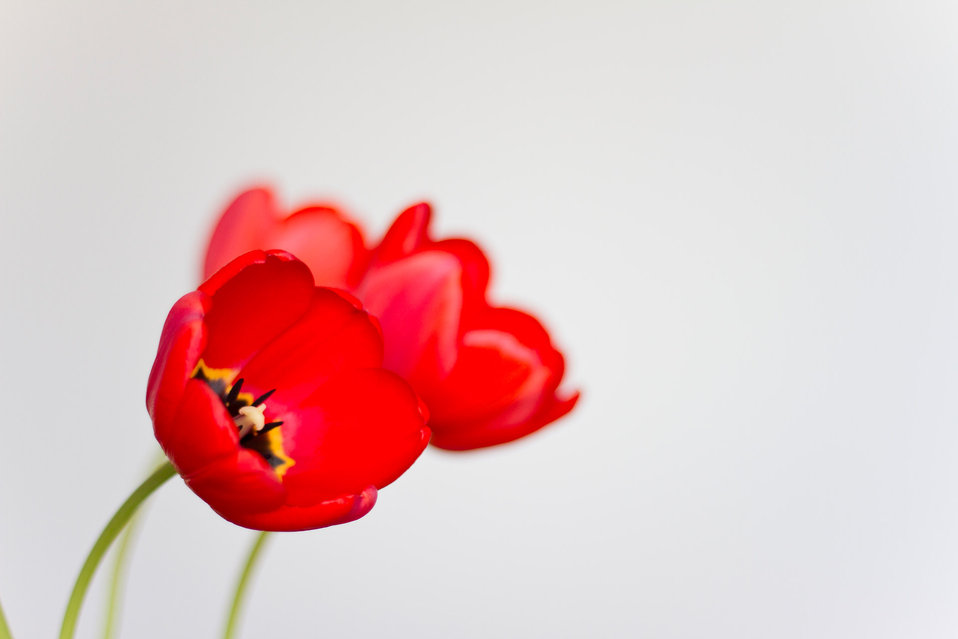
Tulips

Red tulips on white background.